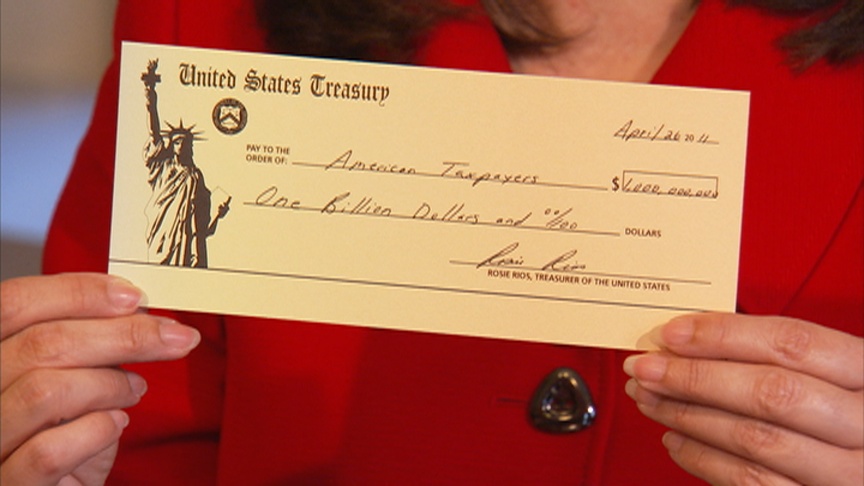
Treasury Moves to Electronic Payment Methods for Federal Benefits

On Tuesday, April 26, 2011, Treasurer Rosie Rios wrote a ceremonial check to American taxpayers to highlight the $1 billion that taxpayers will save over the next 10 years as Treasury moves to electronic payment methods for federal benefits.